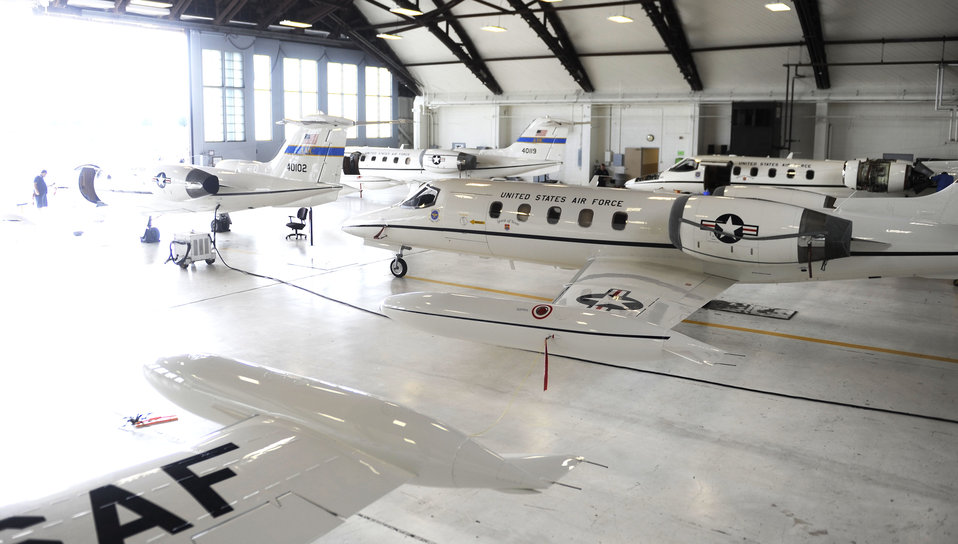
C-21 phase inspection

A group of C-21s await a phase inspection Sept. 16, 2010, at Scott Air Force Base, Ill. The phase inspections are done on aircraft after they reach flying milestones.